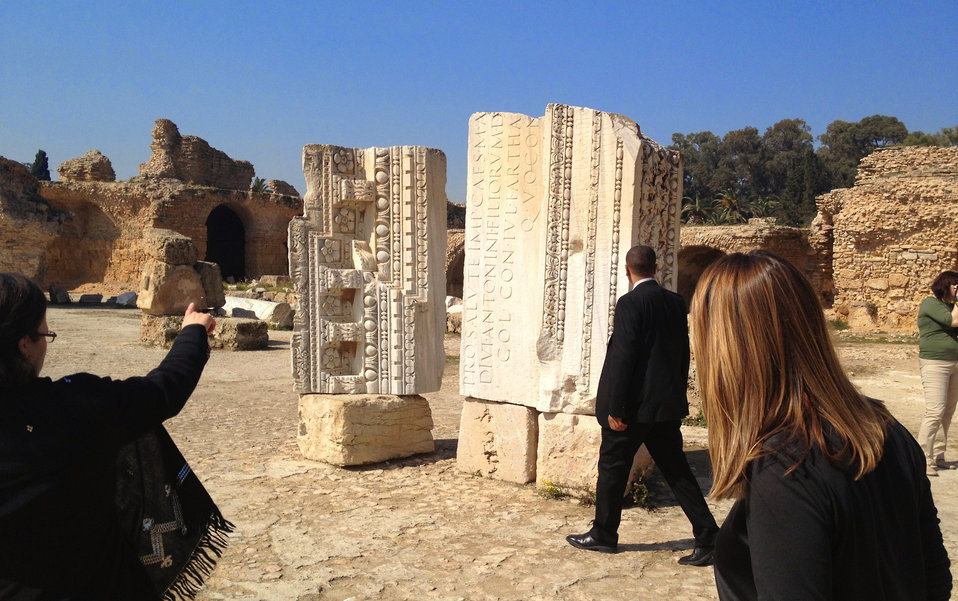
Deputy Secretary Higginbottom Visits the Archaeological Site of Carthage

Deputy Secretary of State for Management and Resources Heather Higginbottom visits the Archaeological Site of Carthage, a UNESCO World Heritage Site, in Tunisia, on March 18, 2014.